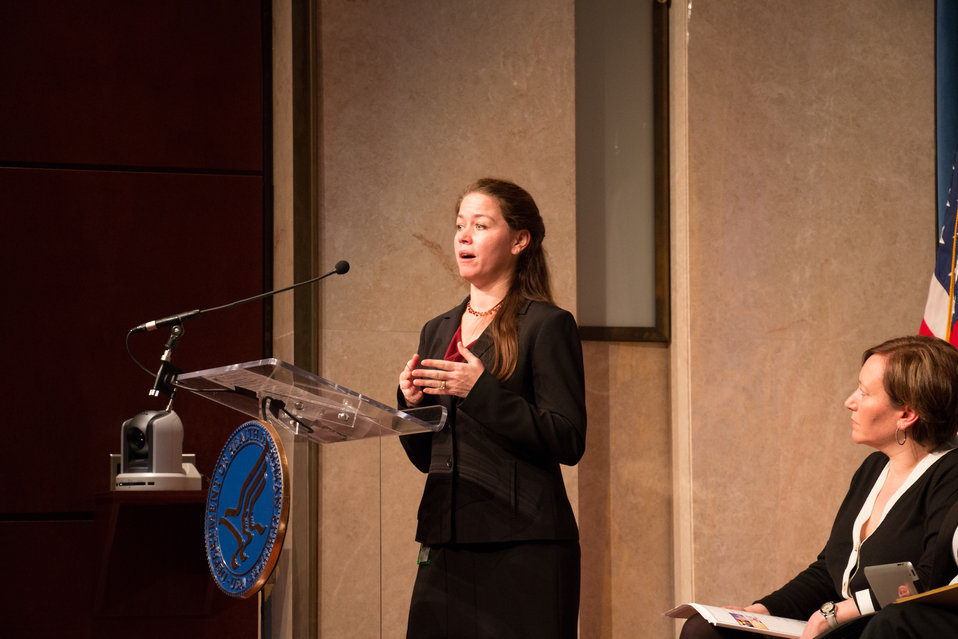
VHAP Launch (311 of 511)